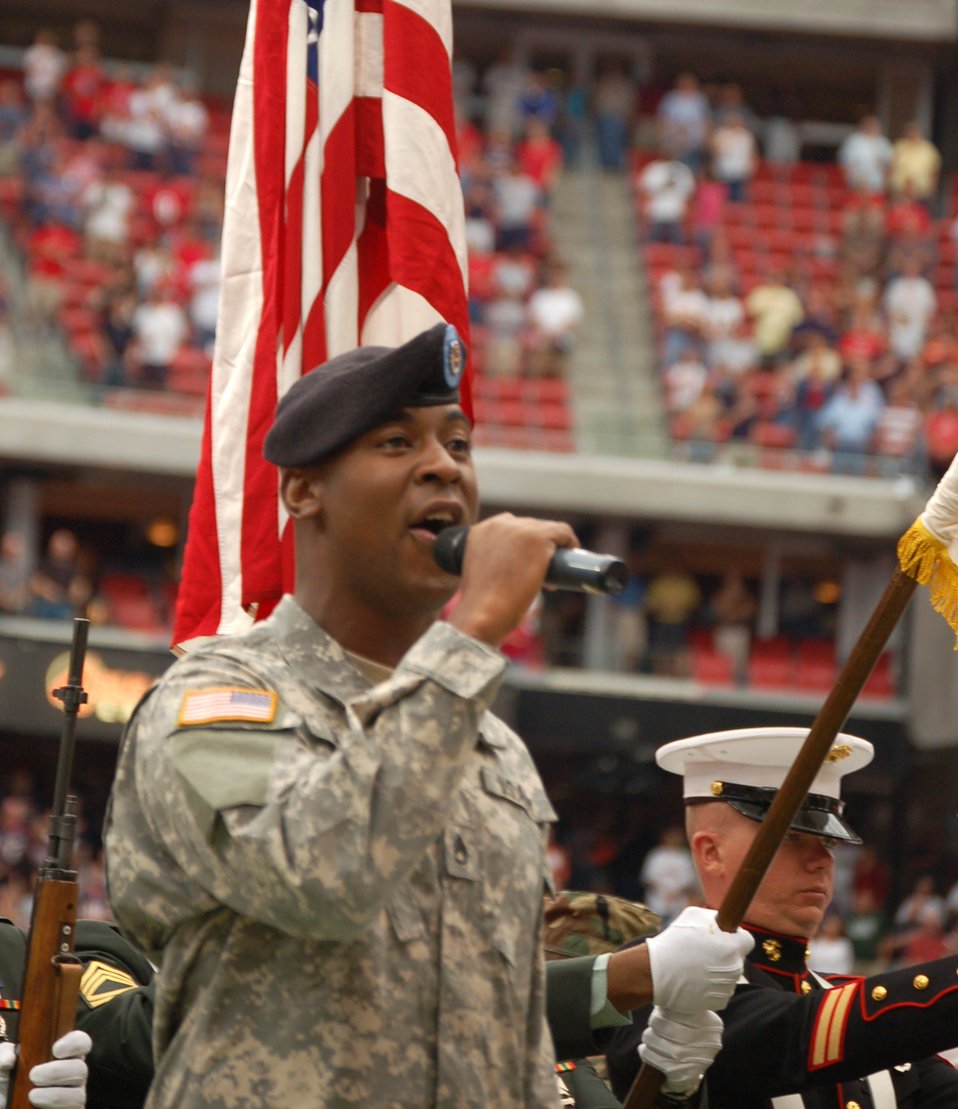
Servicemembers shine during NFL game

Army Staff Sgt. Santantoniano Smith from the Houston Recruiting Battalion sings the national anthem in front of a joint color guard from Houston at Reliant Stadium prior to the Houston Texans and Washington Redskins National Football League game Sept. 24. The Texans honored servicemembers in their Salute to the Military day.